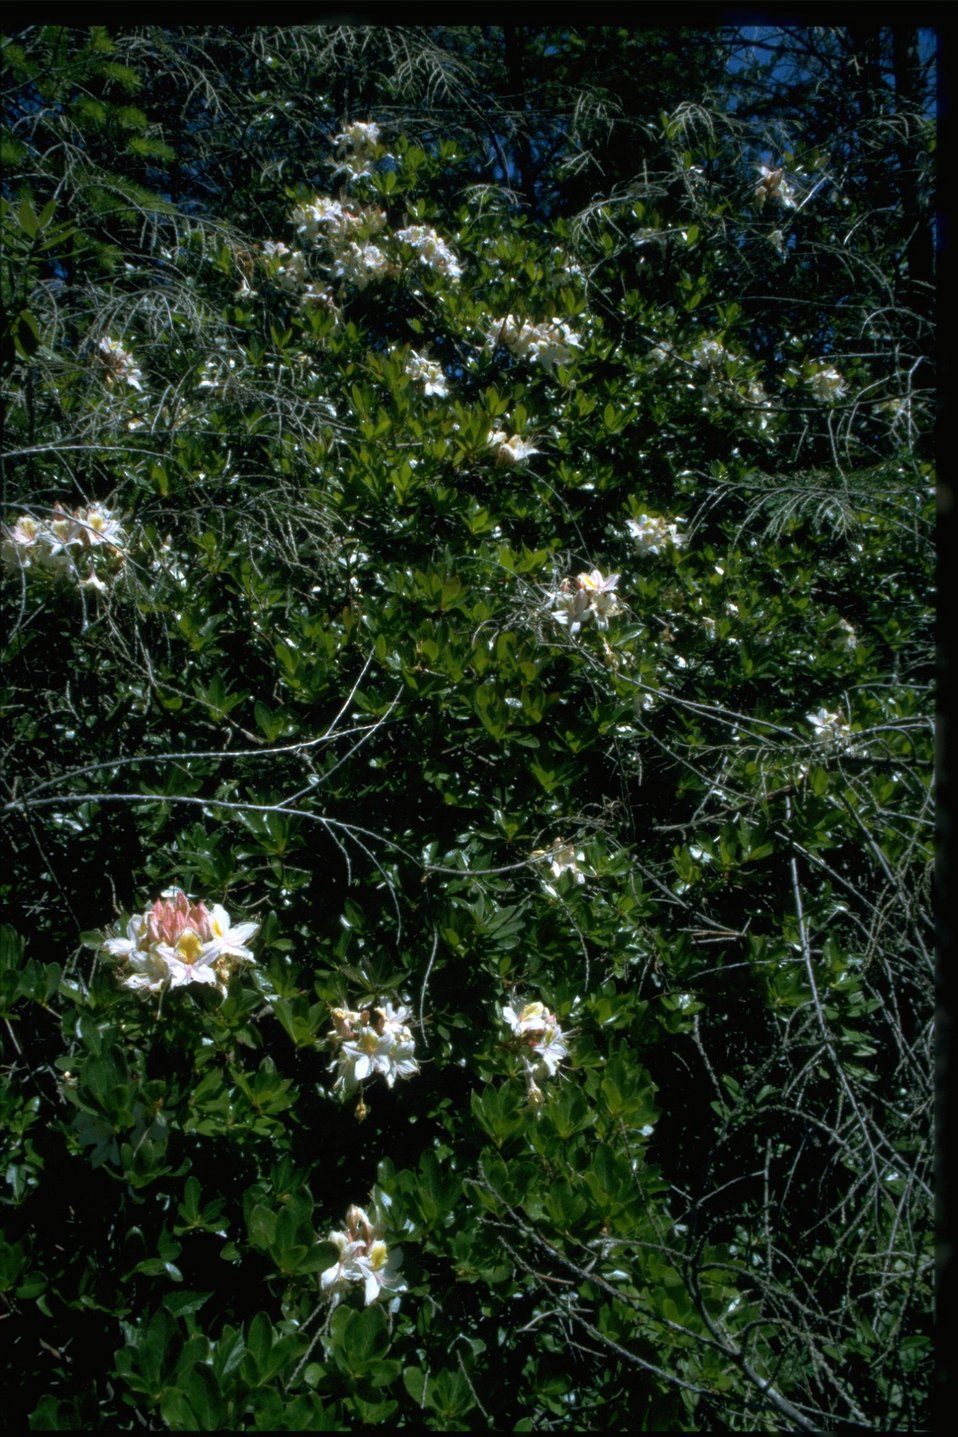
Farshot of Rhododendron occidentale.